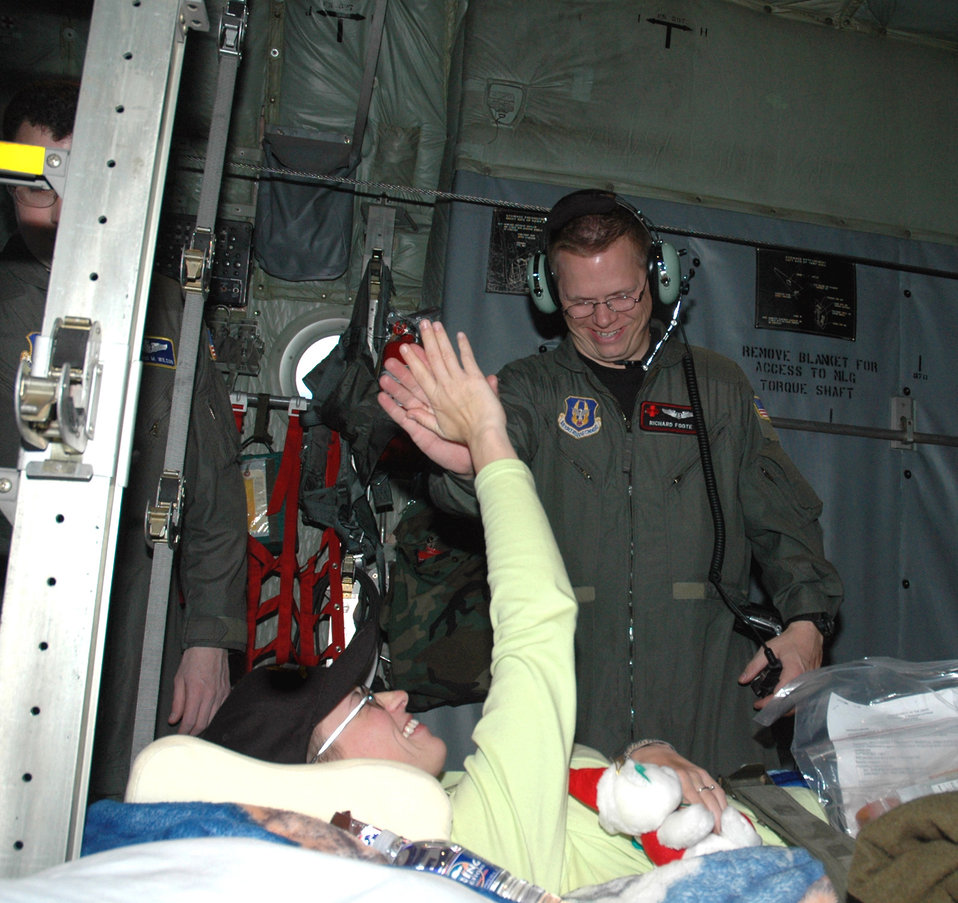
Volunteerism at heart of medical evacuation mission

Capt. Richard Foote gets a high five from Army Pvt. Amber Zeunen as she is transported home aboard a C-130 Hercules. Private Zeunen was injured while serving in Operation Iraqi Freedom. Captain Foote is an Air Force Reserve Command flight nurse with the 908th Airlift Wing at Maxwell AFB, Ala.